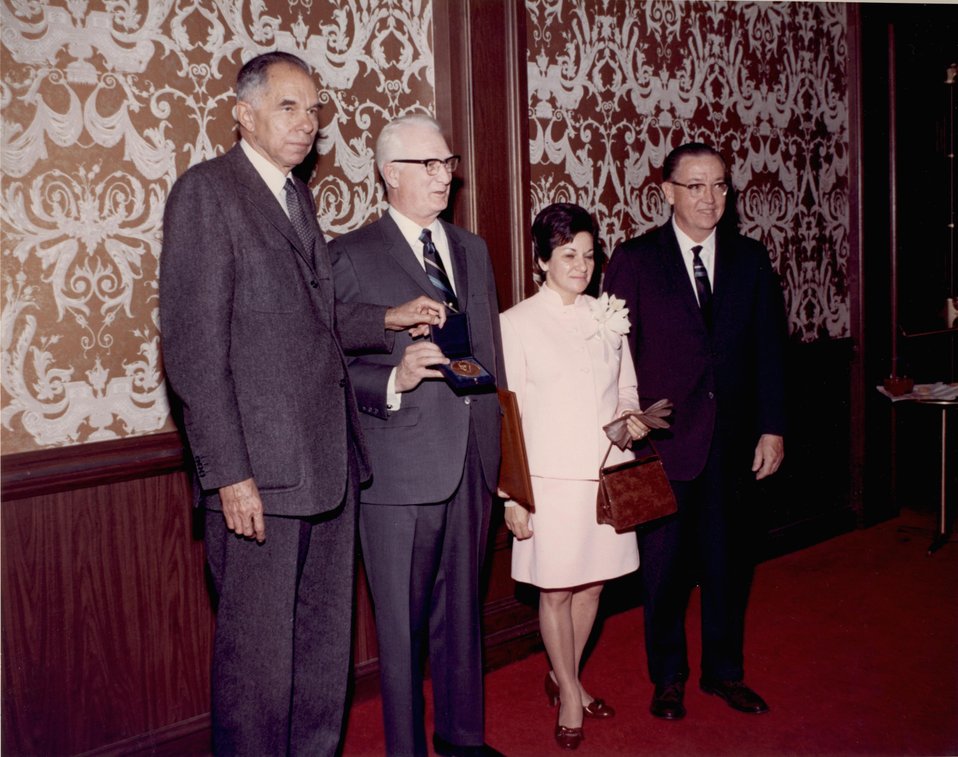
Fermi Award. Recipient: Walter Zinn. Date: Dec 2, 1970.